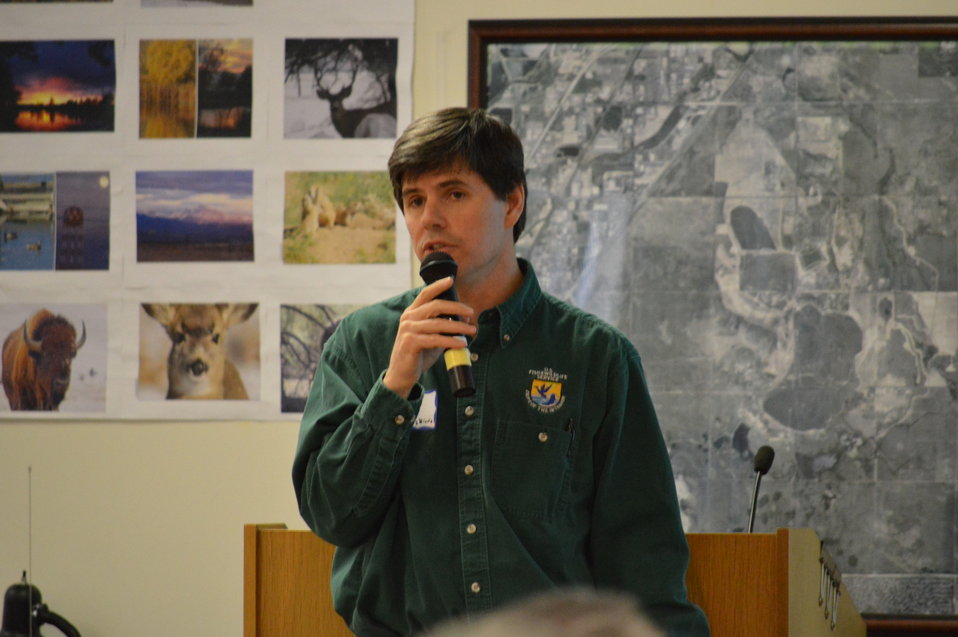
Eagle Summit III

Clint Riley starts his presentation at the Eagle Summit III in Denver, Colorado on March 20, 2014 at the Rocky Mountain Arsenal National Wildlife Refuge.